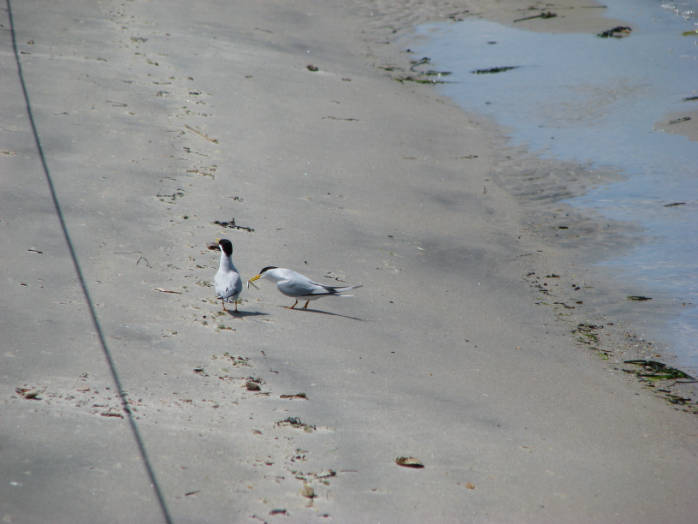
Common Terns on Beach

Sandy Point, RI.